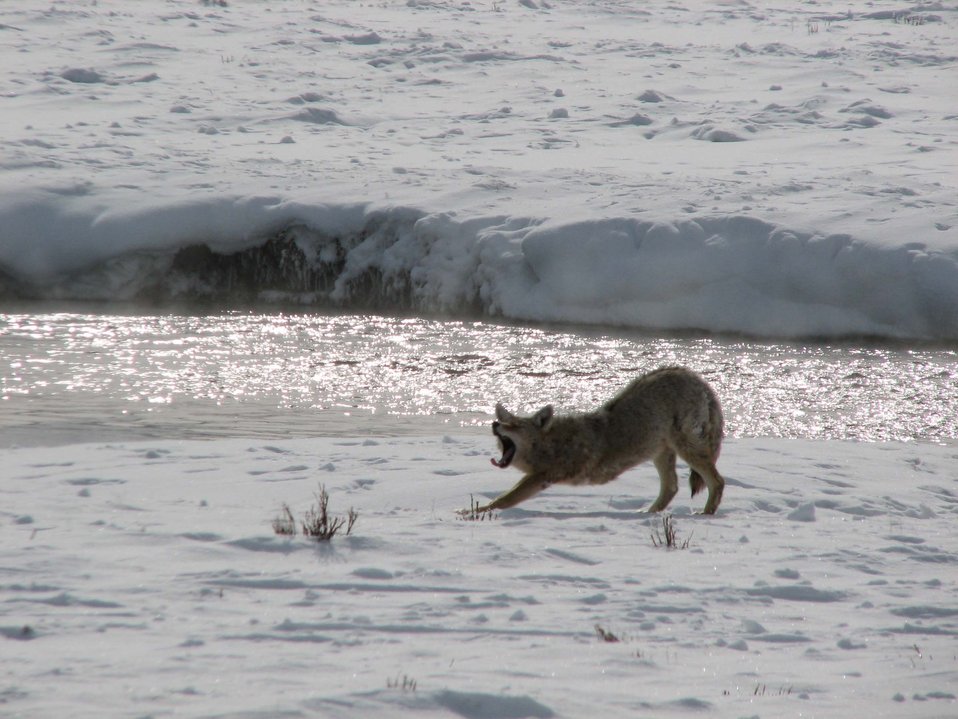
Time to Move On

A coyote yawns and takes an afternoon stretch near Flat Creek on the National Elk Refuge.